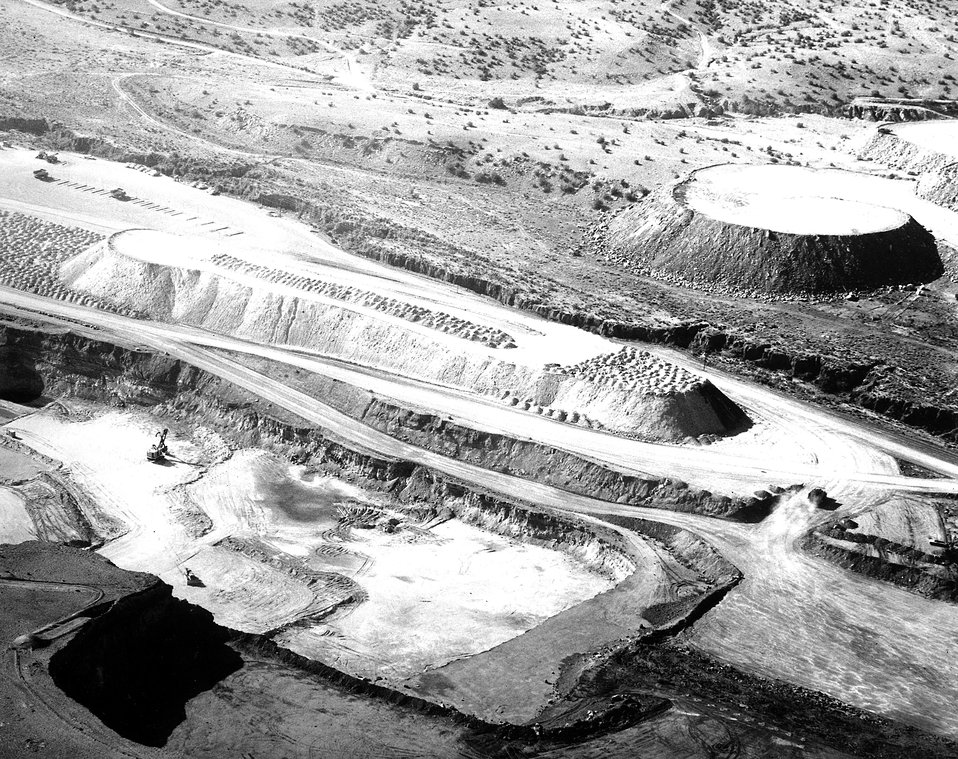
Open pit uranium mine in Grants, New Mexico. The shovel gives an idea of scale. c. 1968